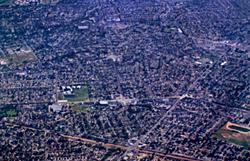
La city dev